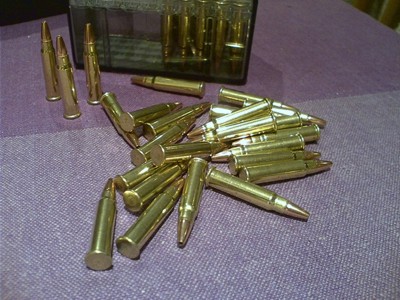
Slovenčina: Náboj.17 HMR.